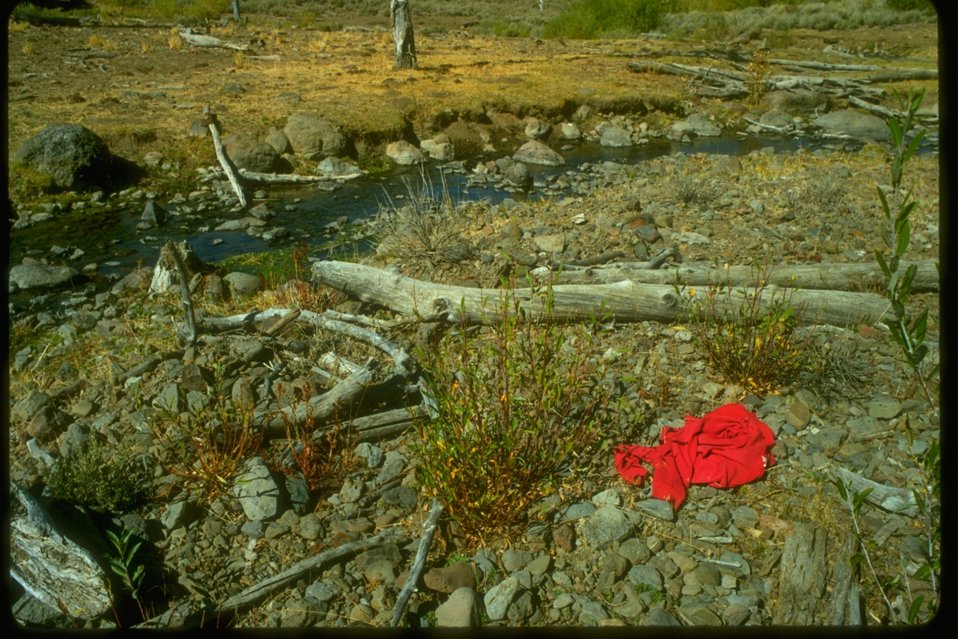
Riparian recovery before change in management in Steens.